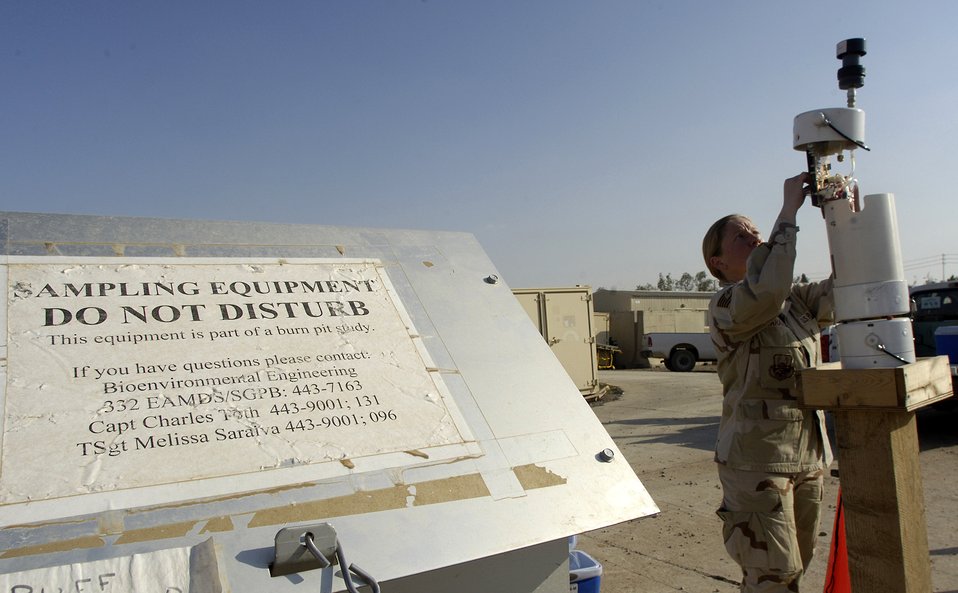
Bioenvironmental engineers keep Airmen safe

Tech. Sgt. Melissa Saraiva checks a monitoring device April 13 at Balad Air Base, Iraq, for common pesticides and other environmental hazardous chemicals in the air. Sergeant Saraiva is the bioenvironmental engineer flight NCOIC. Bioenvironmental engineers perform environmental, occupational and radiological surveillance in order to protect and maintain a healthy work force, and they serve as mission enhancers during emergency management response operations.